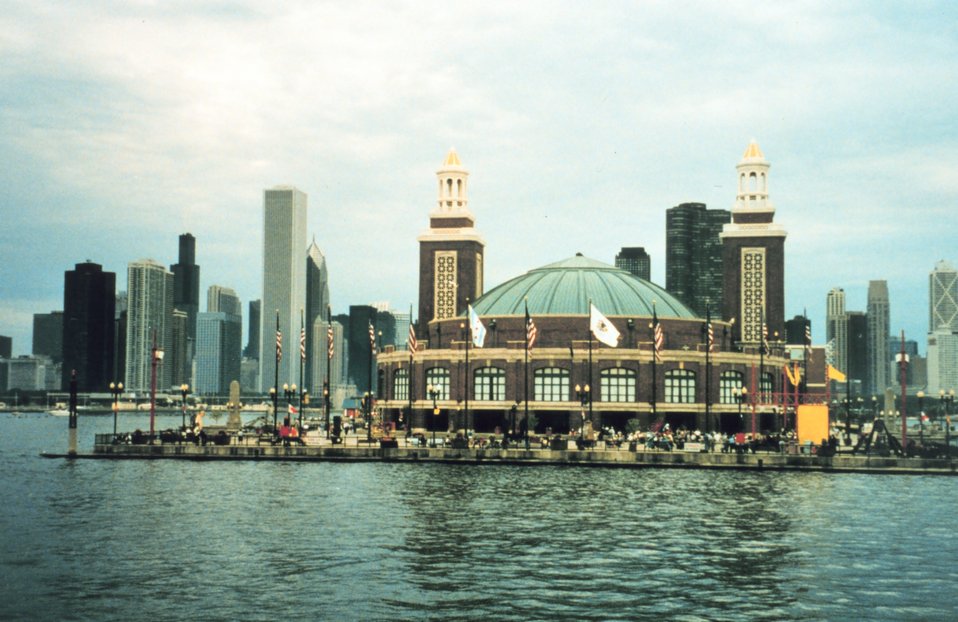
Lake Michigan waterfront